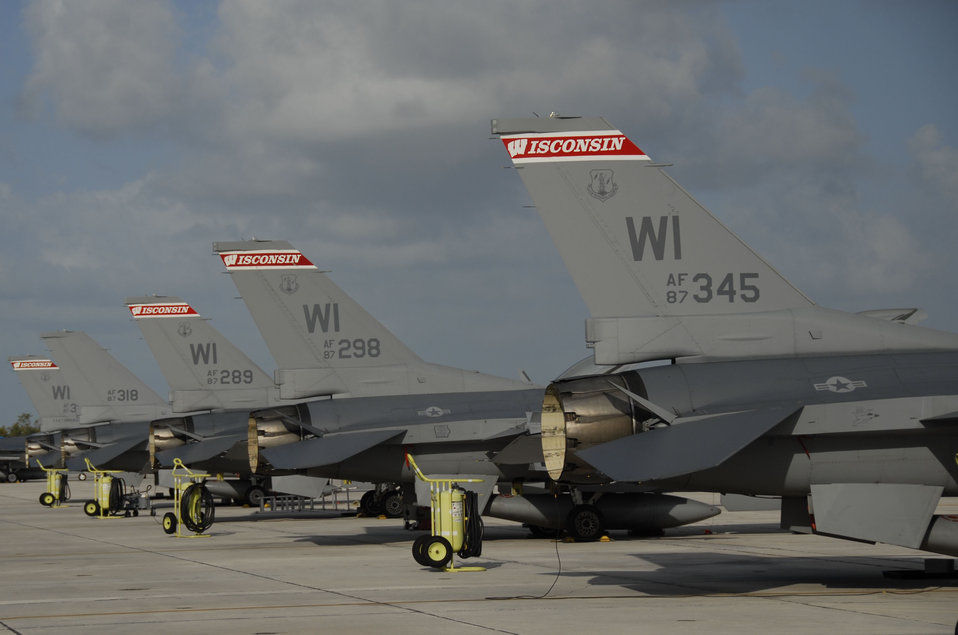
Air Guard, Navy train together

F-16 Fighting Falcons sit on the ramp at Naval Air Station Key West., Fla. Pilots from the Wisconsin Air National Guard's 115th Fighter Wing in Madison honed their air-to-air combat training skills along side their naval counterparts from Strike Fighter Squadron 2, NAS Lemoore, Calif., during a two-week training exercise.